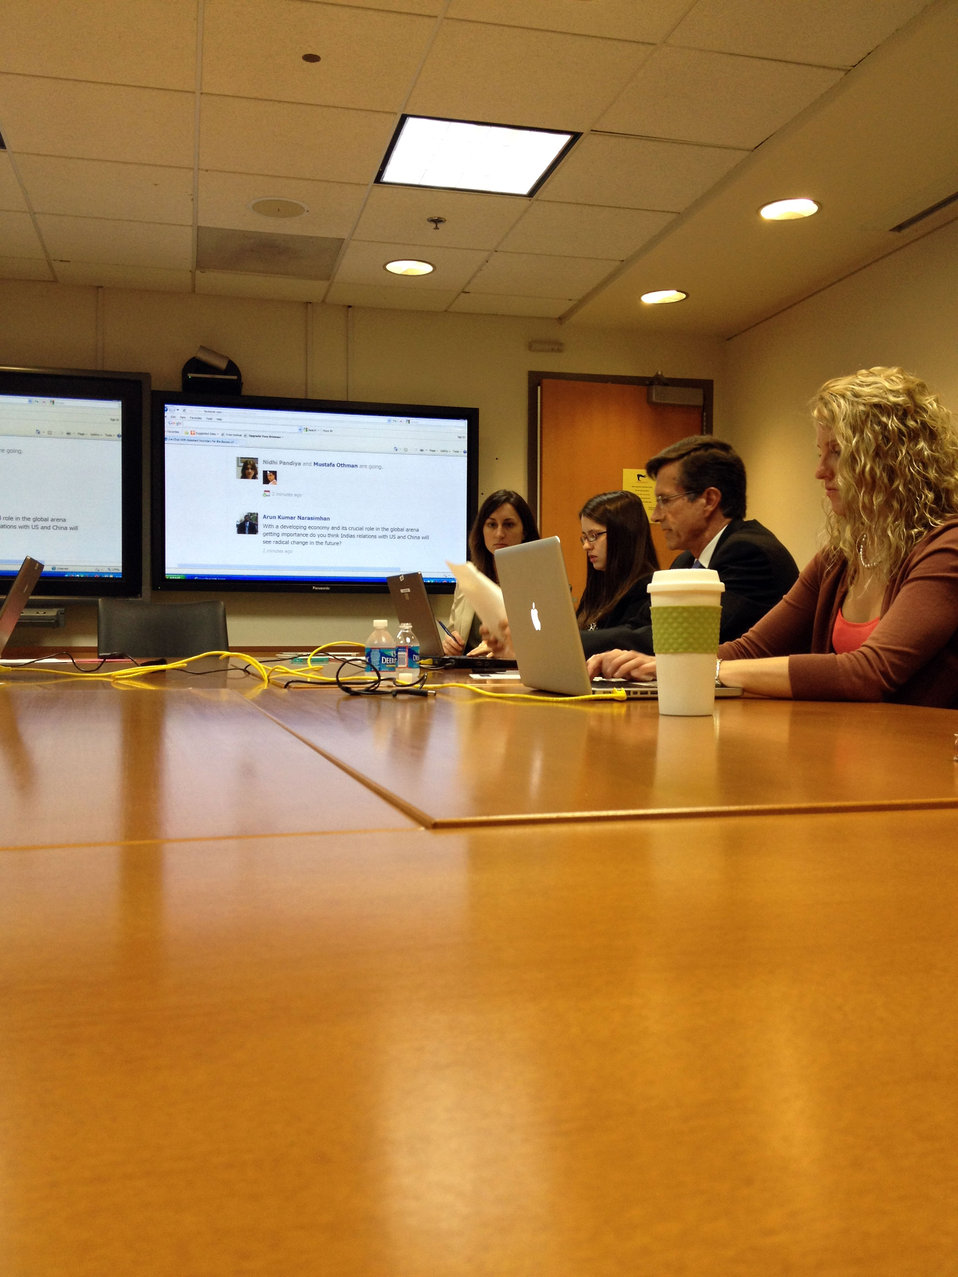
Assistant Secretary Blake Responds to Your Facebook Questions

Assistant Secretary of State for South and Central Asian Affairs Robert O. Blake, Jr., responds to questions during a live Facebook chat at the U.S. Department of State in Washington, D.C., on June 11, 2012.